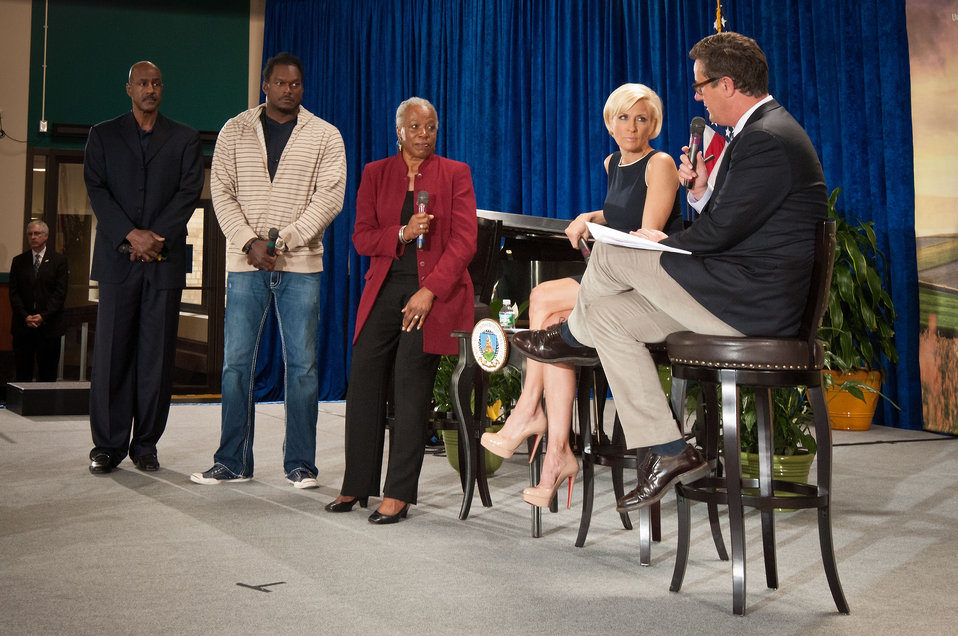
Audrey Rowe, Administrator, Food Nutrition Service introduces Art Monk National Football League Hall of Famer (left) and La Var Arrington, three time Pro-Bowler (right) to Mika Brzezinski and Former Congressman Joe Scarborough (R-Fla.) hosts of MSNBC’s “Morning Joe” and Masters of Ceremony. Rowe spoke about the Fuel Up to Play 60 program at the United States Department of Agriculture's 150th Anniversary celebration in Washington, D.C., on Tuesday, May 15, 2012. Fuel Up to Play 60 is an in-school nutrition and physical activity program launched by the National Dairy Council and the Nationjal Football League, in collaboration with USDA, to combat childhood obesity. Fuel Up to Play 60 helps students make positive changes in their schools by improving opportunities to consume nutrient-rich foods and get at least 60 minutes of physical activity every day. The ultimate goal is to ensure changes made at school are sustainable and complements but does not compete with an academics-focused environment.